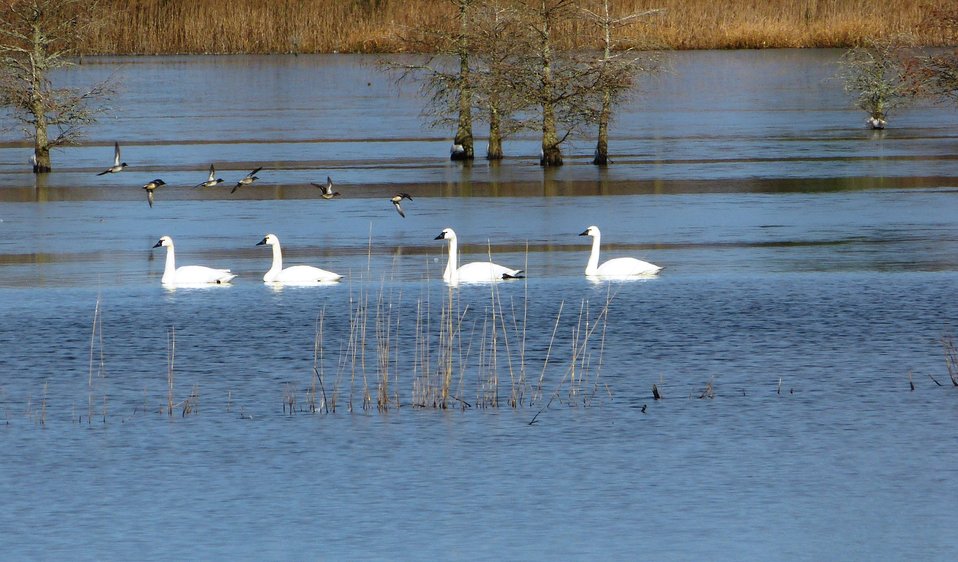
Swans and teal on Lake Mattamuskeet

At Mattamuskeet National Wildlife Refuge in North Carolina. The Refuge’s prime location along the Atlantic Flyway makes it a vitally important stopover for wintering waterfowl.